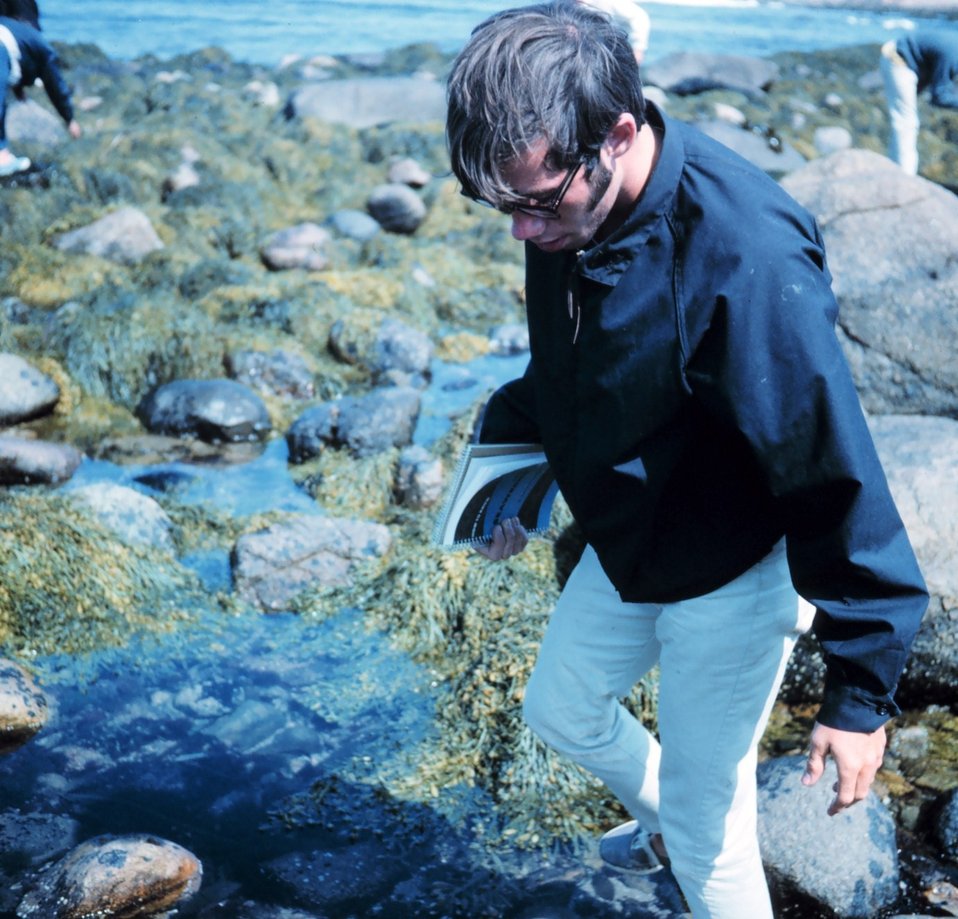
St. Mary's College of Maryland student investigating the various seaweeds and invertebrates found in Massachusetts tide pools.